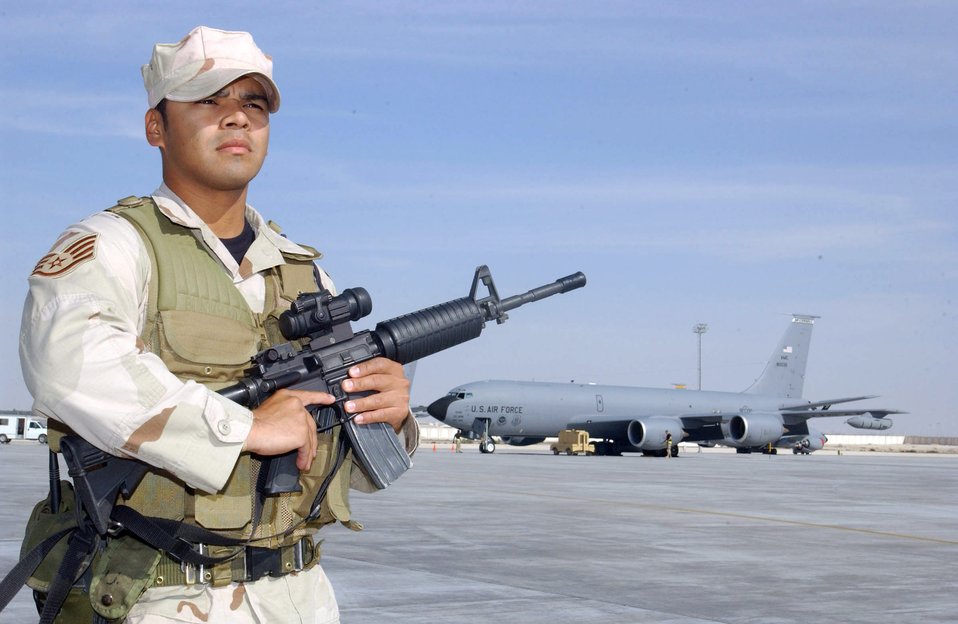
Standing watch

SOUTHWEST ASIA (AFPN) -- On Christmas Eve, Staff Sgt. Andrew Gonzales stands guard over KC-135 Stratotankers at this desert air base. He is deployed from the 436th Security Forces Squadron at Dover Air Force Base, Del.